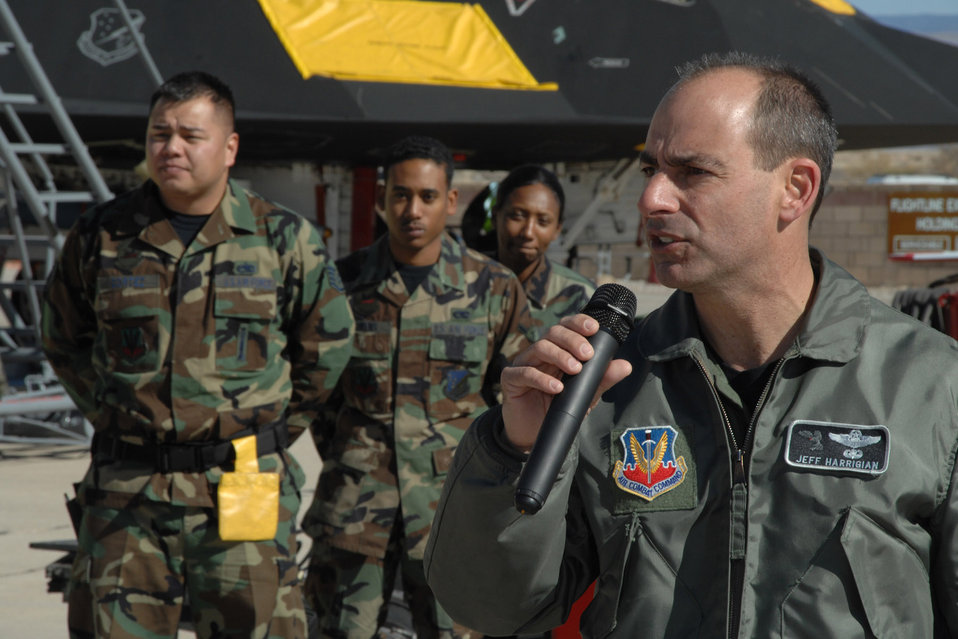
Holloman weapon loaders compete for last time on F-117

Col. Jeffrey Harrigian gives closing remarks at the F-117 Nighthawk Weapons Load Crew of the Year Competition Jan. 18 at Holloman Air Force Base, N.M. The competition placed the four best weapons load crews (two from the 8th Aircraft Maintenance Unit and two from the 9th Aircraft Maintenence Unit) against each other to determine who the best load crew of the year was. The competition is the last for the F-117 as Holloman AFB is scheduled to retire the aircraft and bring in the F-22 Raptor. Colonel Harrigian is the 49th Fighter Wing commander.